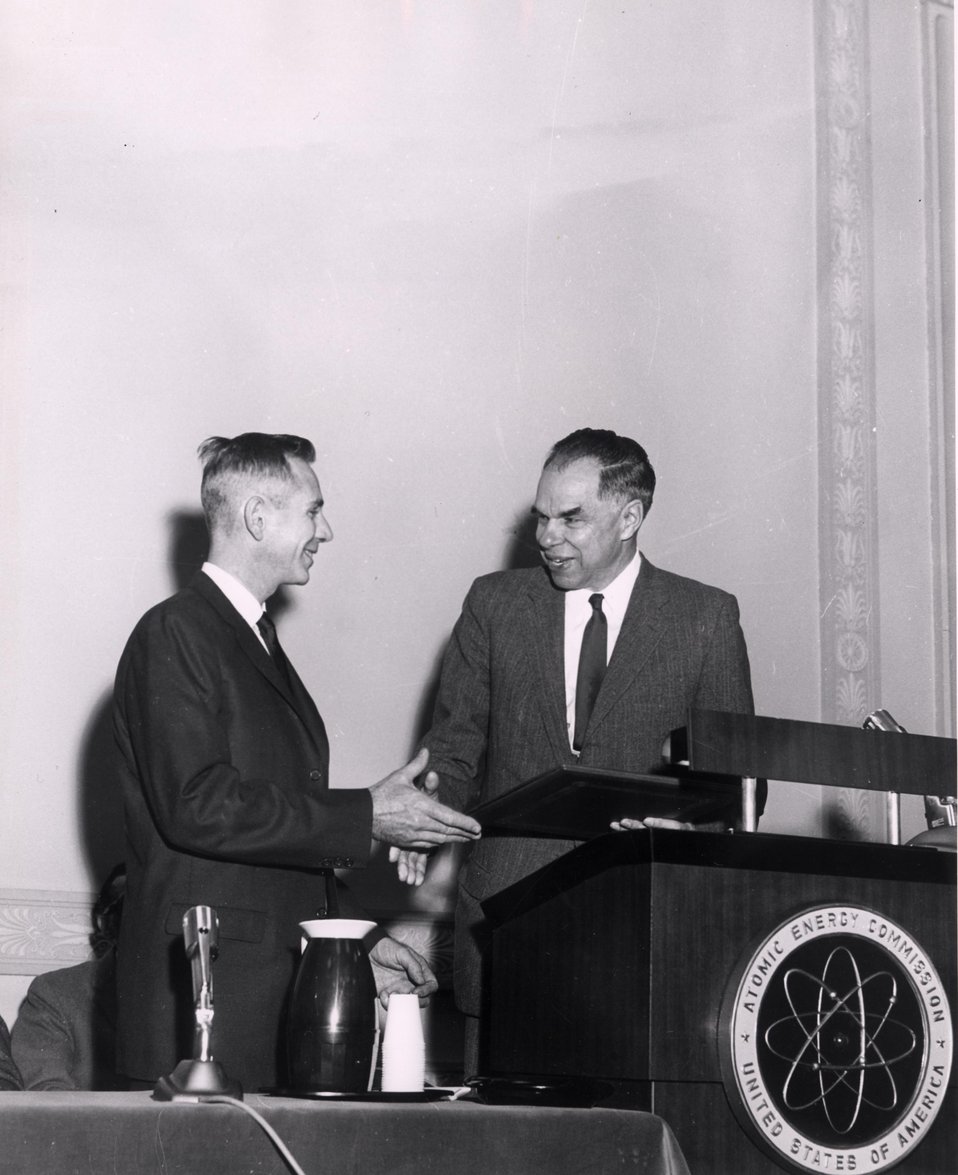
Lawrence Award Ceremony, 1961.